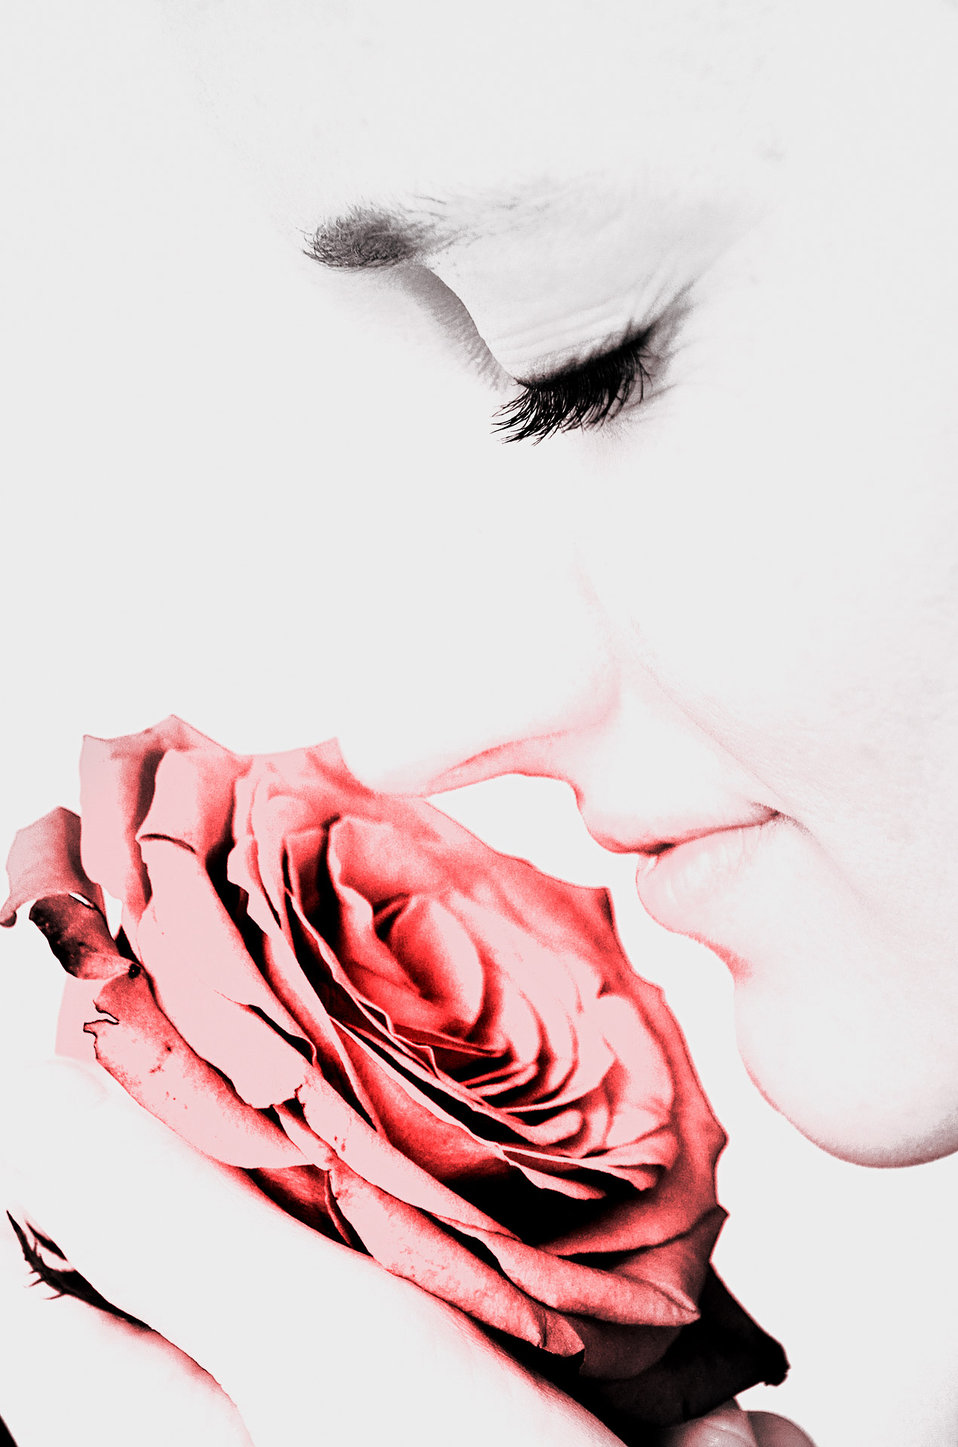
Woman and roses.